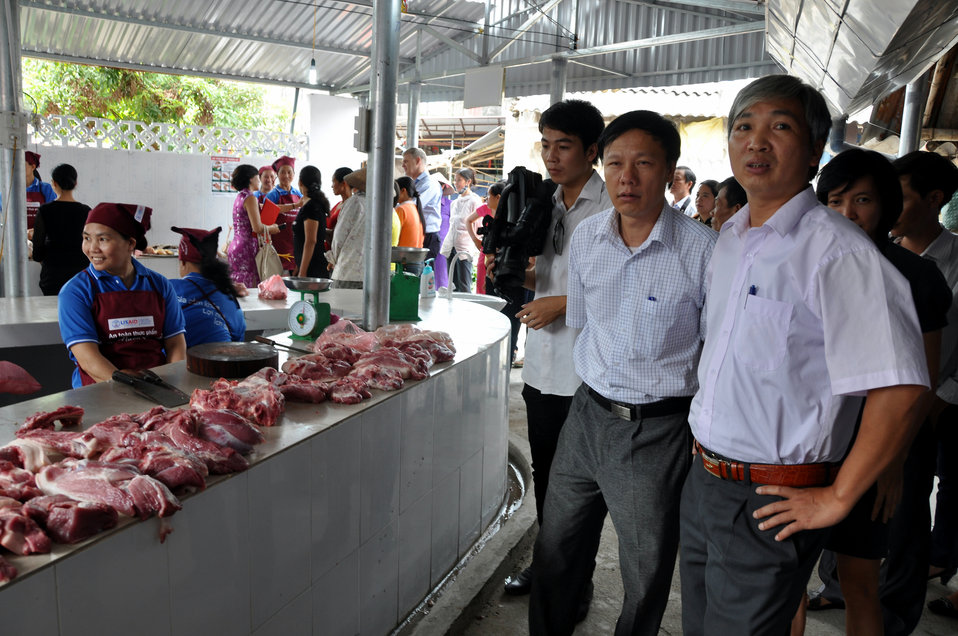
Handover Ceremony Hoa Mac Market Ha Nam

October 26, 2012